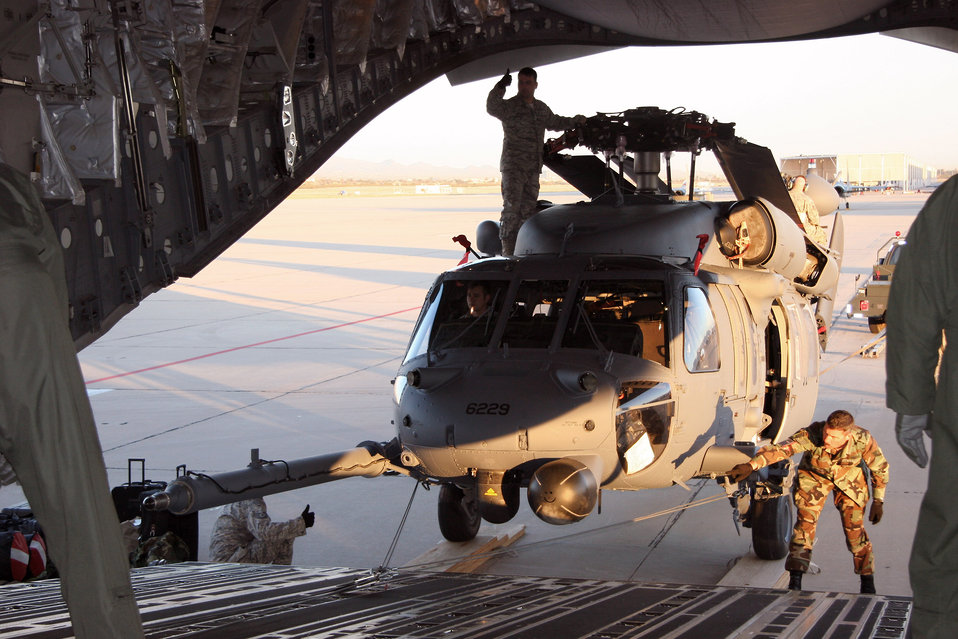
Rescue unit to support space shuttle launch

Aircraft maintainters from the 943rd Maintenance Squadron prepare to load a HH-60G Pave Hawk helicopter onto a C-17 Globemaster III March 7 at Davis-Monthan Air Force Base, Ariz. Two helicopters were loaded onto the C-17 from McChord Air Force Base, Wash, and deployed to Patrick AFB, Fla., to augment the launch of the Space Shuttle Discovery. Twenty reservists from the 943rd Rescue Group are supporting this mission.